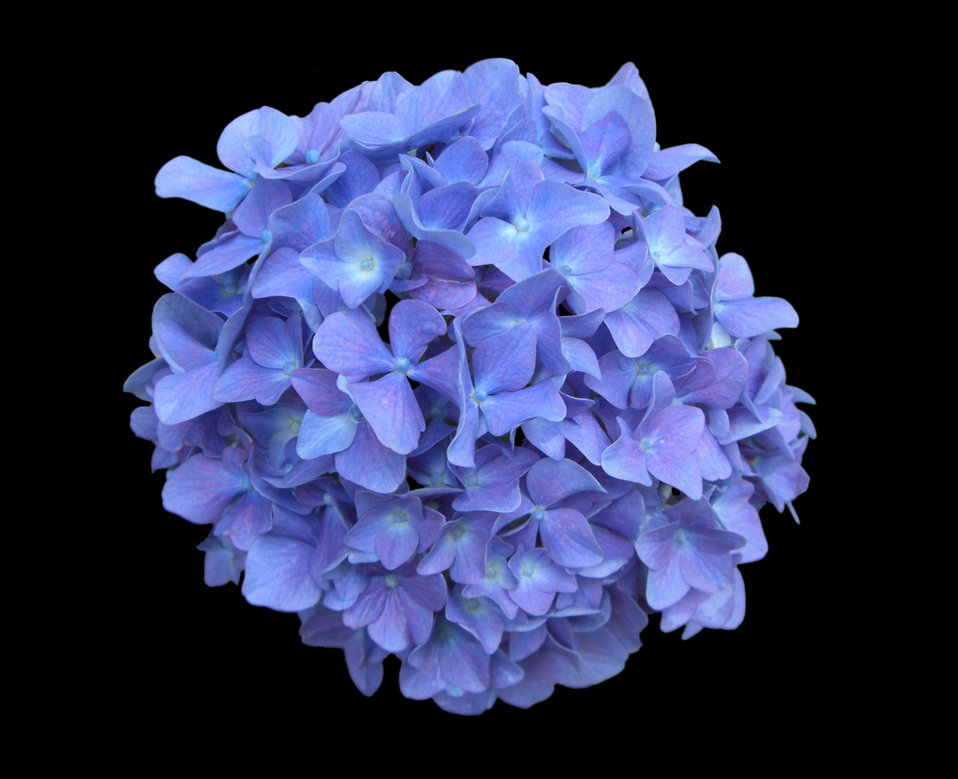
Hydrangea on black..